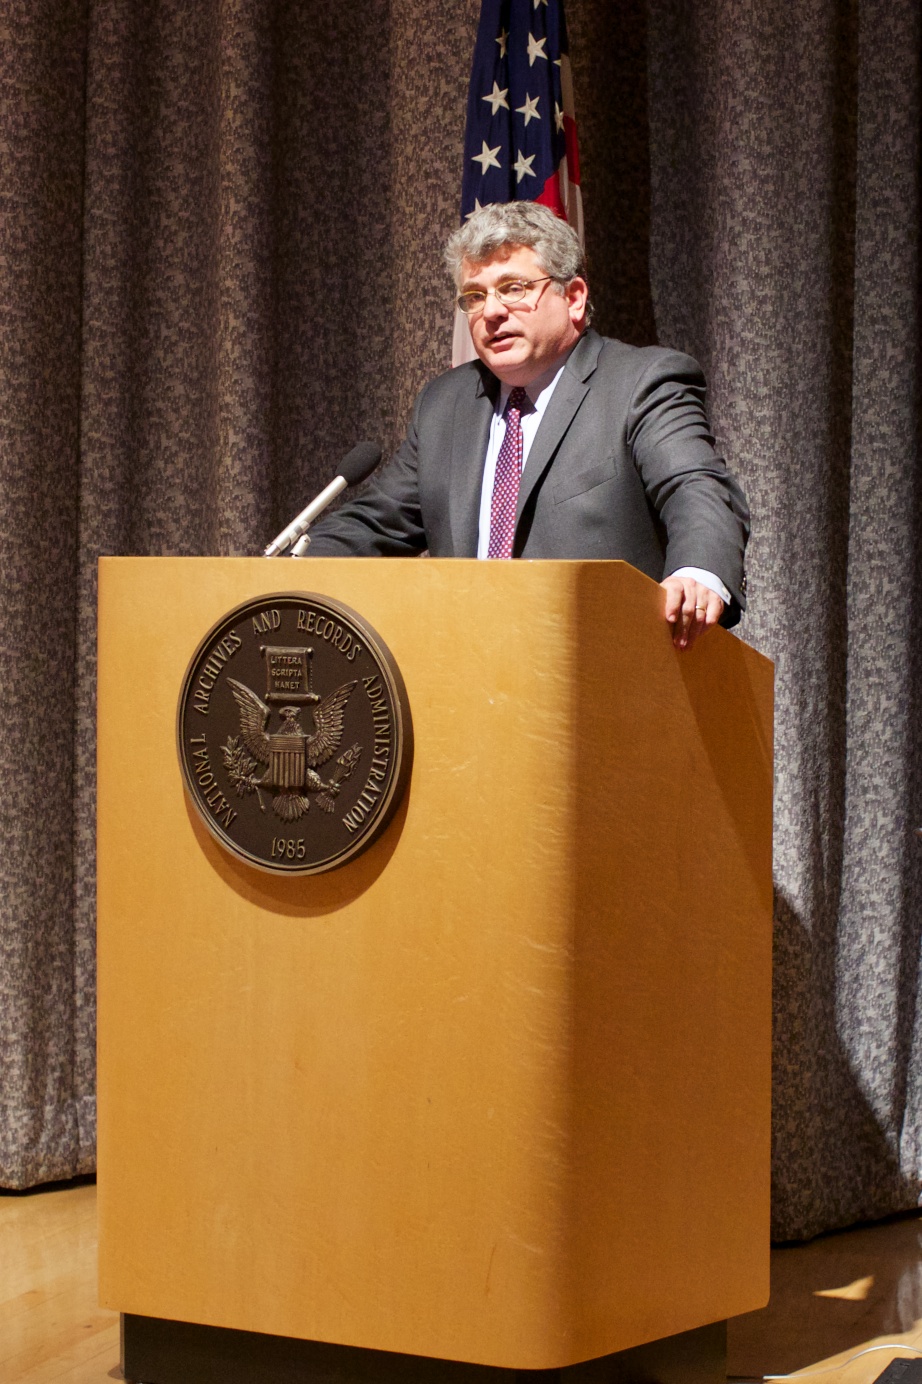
CFC Recognition Event